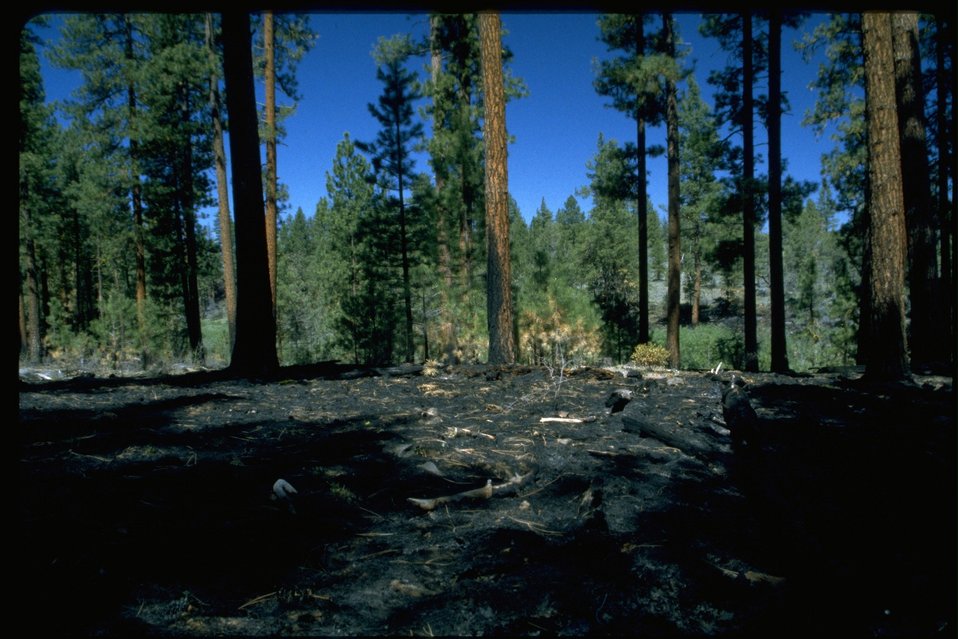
Prescribed burn area CCC (Civilian Conservation Corps) road near Barnes Valley.